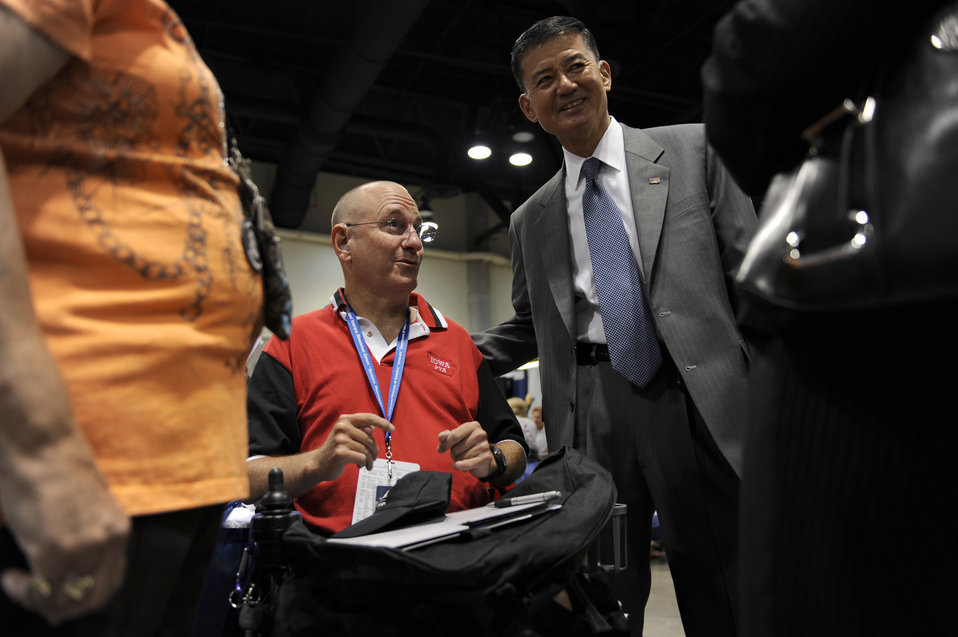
Veterans wheelchair games kick off

Secretary of Veterans Affairs Eric K. Shinseki greets Michael Brady July 13 before the opening ceremony for the 29th National Veterans Wheelchair Games held in Spokane, Wa . More than 500 veterans meet at the convention center to take part in the 2009 National Veterans Wheelchair Games July 13 through 19.